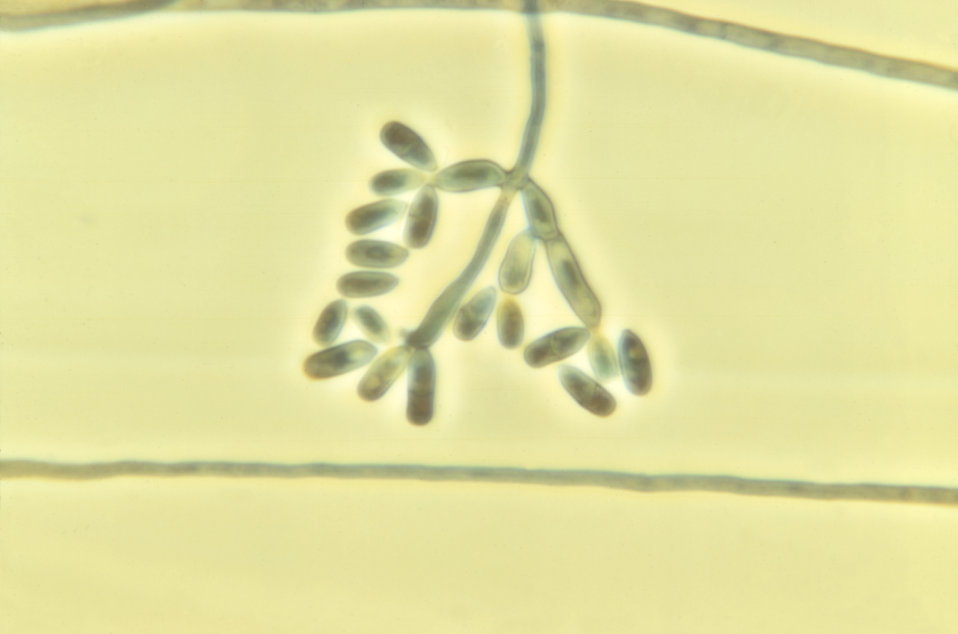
Under a magnification of 1125X, this photomicrograph revealed some of the ultrastructural morphology exhibited by the fungal organism Exophiala brunnea.